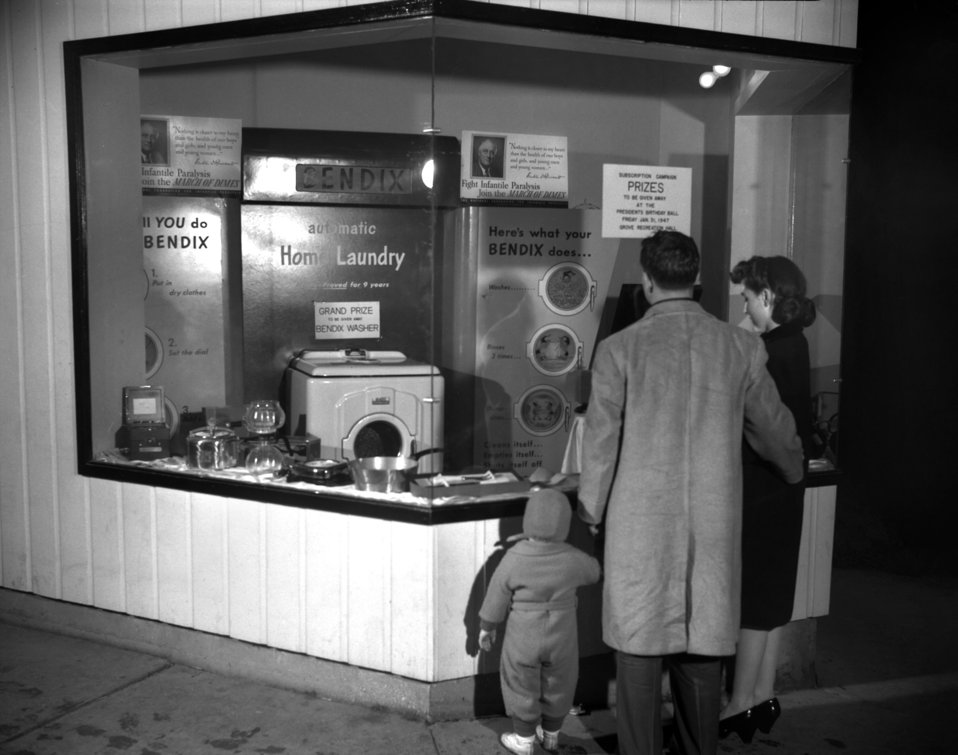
Elks Club Washer Give Away for March of Dimes Oak Ridge

3269-1 DOE photo Ed Westcott 1-25-1947 Oak Ridge Tennessee